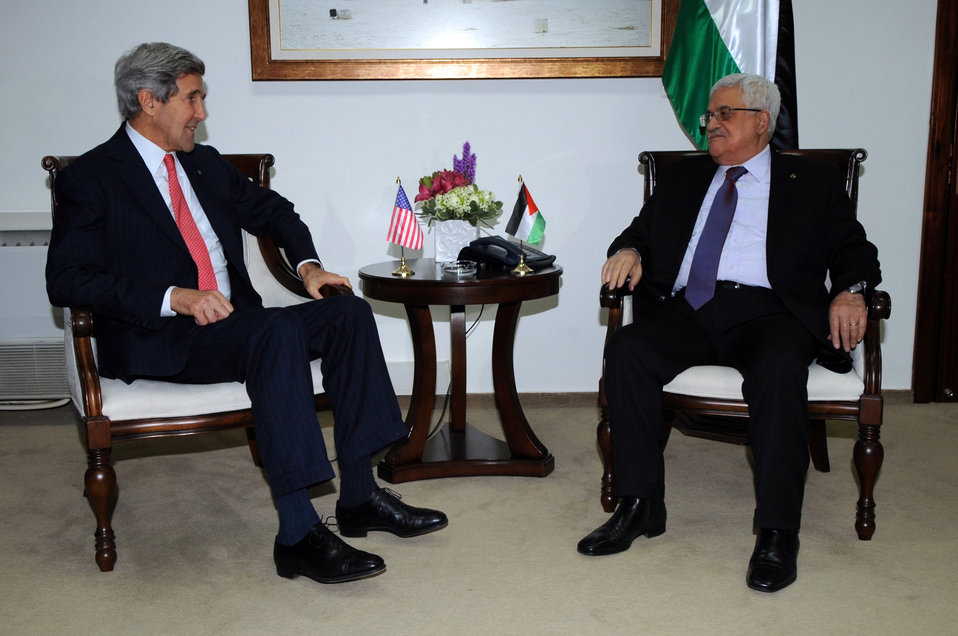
Secretary Kerry Meets With Palestinian Authority President Abbas

U.S. Secretary of State John Kerry sits with Palestinian Authority President Mahmoud Abbas before a meeting in Ramallah, West Bank, on December 12, 2013.